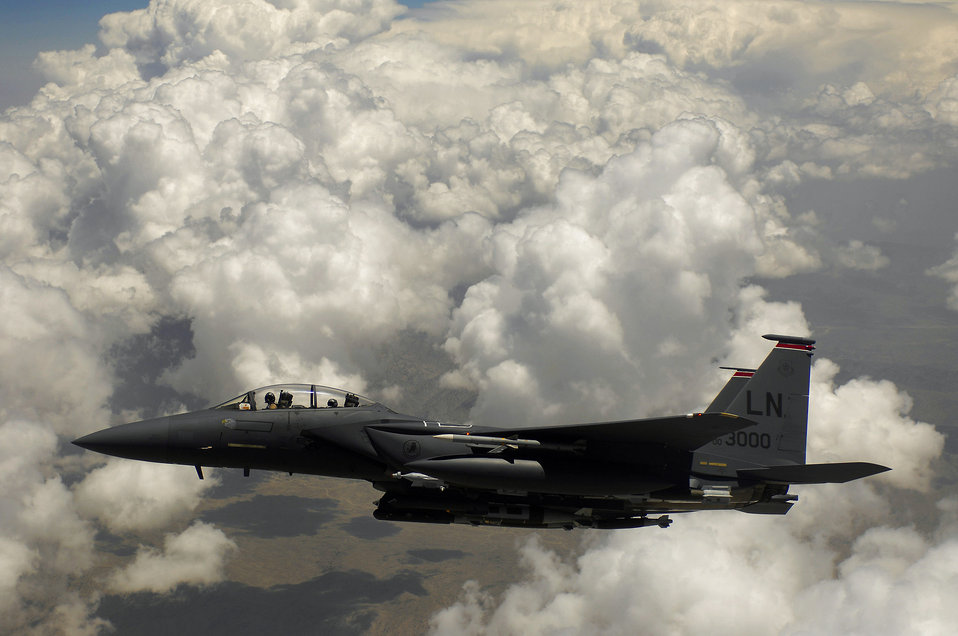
July 2 airpower summary: F-15Es perform shows of force

An Air Force F-15E Strike Eagle waits for his wingman after receiving fuel during a mission over Afghanistan. F-15Es used GBU-31 and GBU-38s to deter anti-Afghan forces fighting positions.